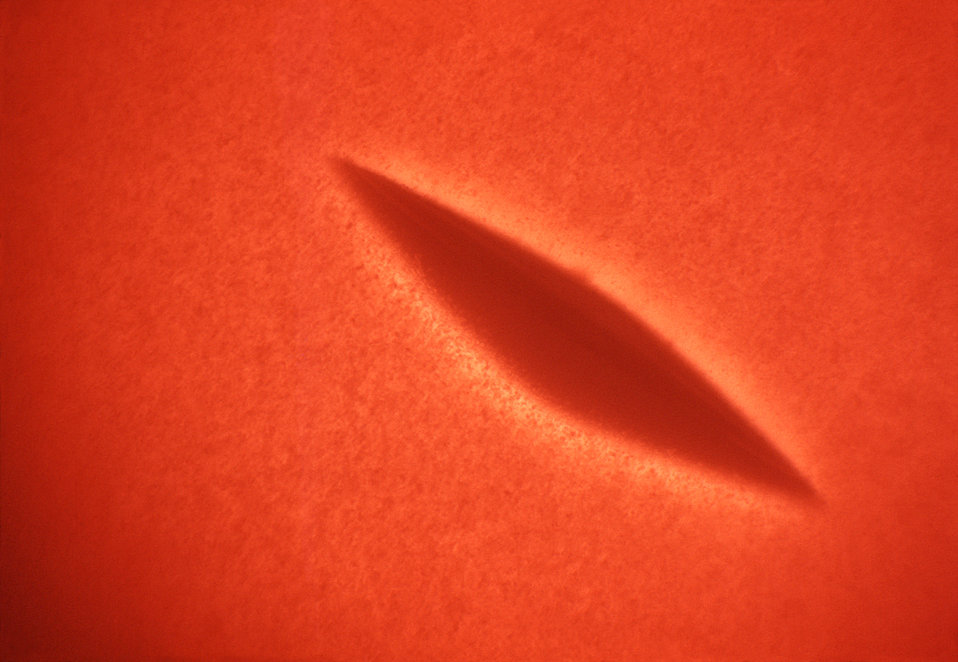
This photograph depicted a subsurface bacterial colony of a non-hemolytic S. pyogenes growing in a Petri dish filled with trypticase soy agar with 5% sheep's blood, (BAP). A loop of diluted non-hemolytic S. pyogenes culture was put into the melted agar (50oC) just before the blood was added to the melted agar, which was then allowed to solidify. It was then incubated at 35oC for 24 hours in a normal atmosphere. There was only a very small color change in the region surrounding the colony indicating that a narrow zone of red blood cells in the medium had been altered, which meant that these bacteria were "narrow-zone"-hemolytic in nature. Among the streptococcal species this hemolytic activity is found only with "non-hemolytic GAS".